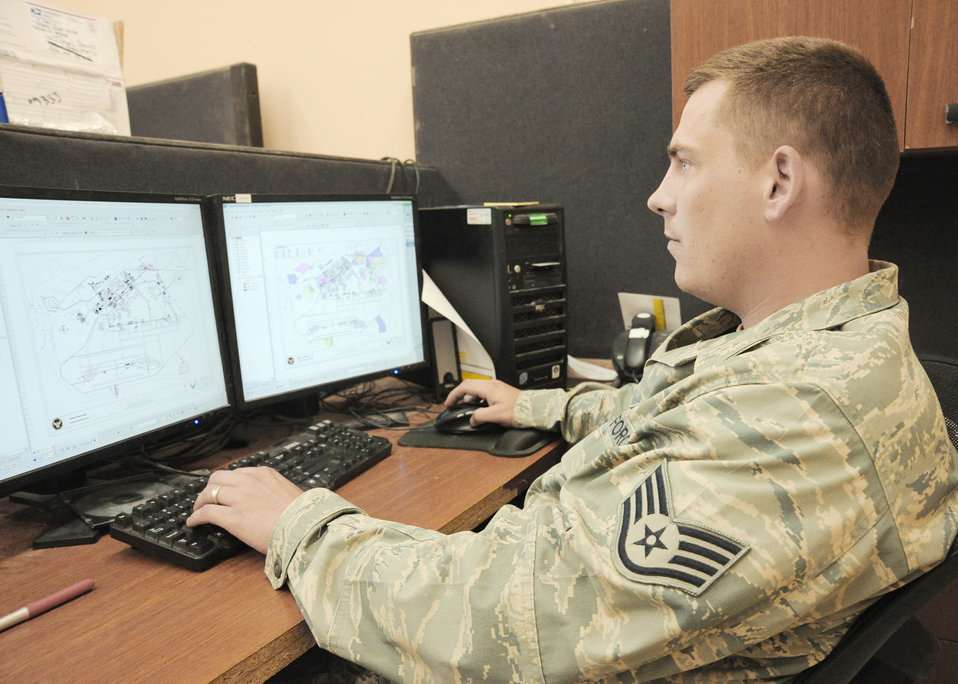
Civil engineers assist with Iraq drawdown

Staff Sgt. Dennis Jones creates maps for key leadership April 19, 2010, at Al Asad Air Base, Iraq. Sergeant Jones is an expeditionary geographic information officer for 732nd Expeditionary Prime Beef Squadron.